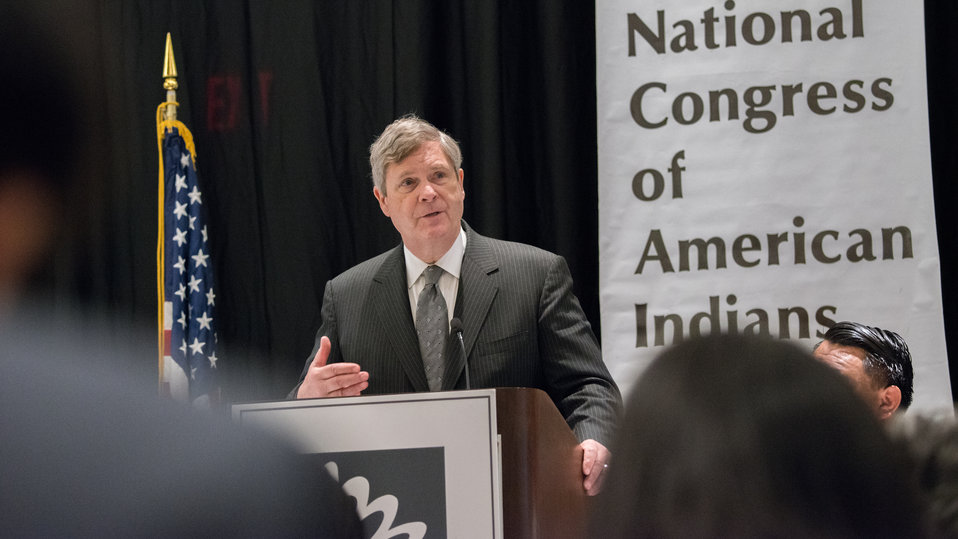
Agriculture Secretary Tom Vilsack addresses the 2014 National Congress of American Indians (NCAI) Executive Council Winter Session at the Westin Washington City Center in Washington, D.C. on Thursday, Mar. 13, 2014.